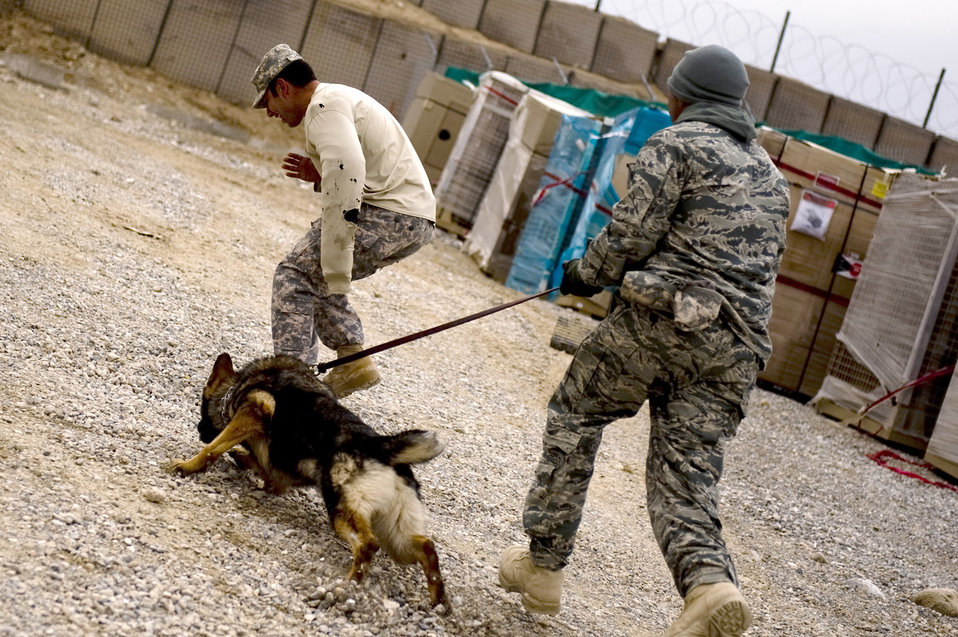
Bringing more bark to fight in Afghanistan

Staff Sgt. Pascual Gutierrez and Edy conduct a challenge training session with Army Spc. Joseph Lopez Feb. 18, 2001, at Forward Operatin Base Lagman, Afghanistan. Sergeant Gutierrez and Specialist Lopez are military working dog handlers and Edy is a military working and patrol explosive detection dog assigned to Combined Team Zabul, Afghanistan. The team is composed of working dogs and dog handlers from the Air Force, Army and Navy who help support the various units at FOB Lagman during patrols and other various missions.